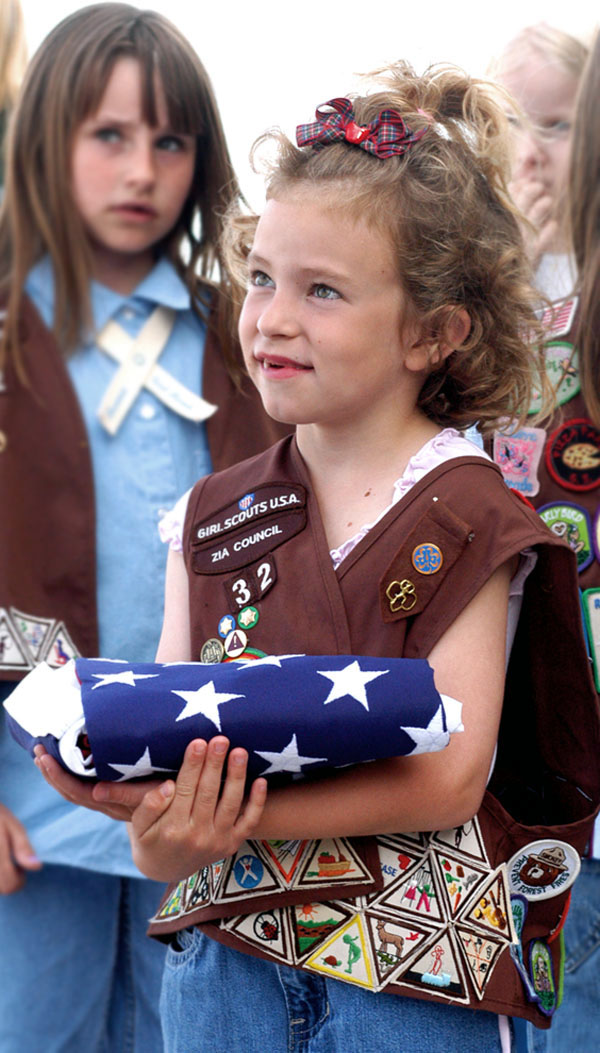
Face of the future

HOLLOMAN AIR FORCE BASE, N.M. -- Caroline Brereton cradles the American flag during a practice retreat here April 2. Caroline and other Girl Scouts from Brownie Troop 32 learned how to display the flag while preparing to become Junior Scouts.